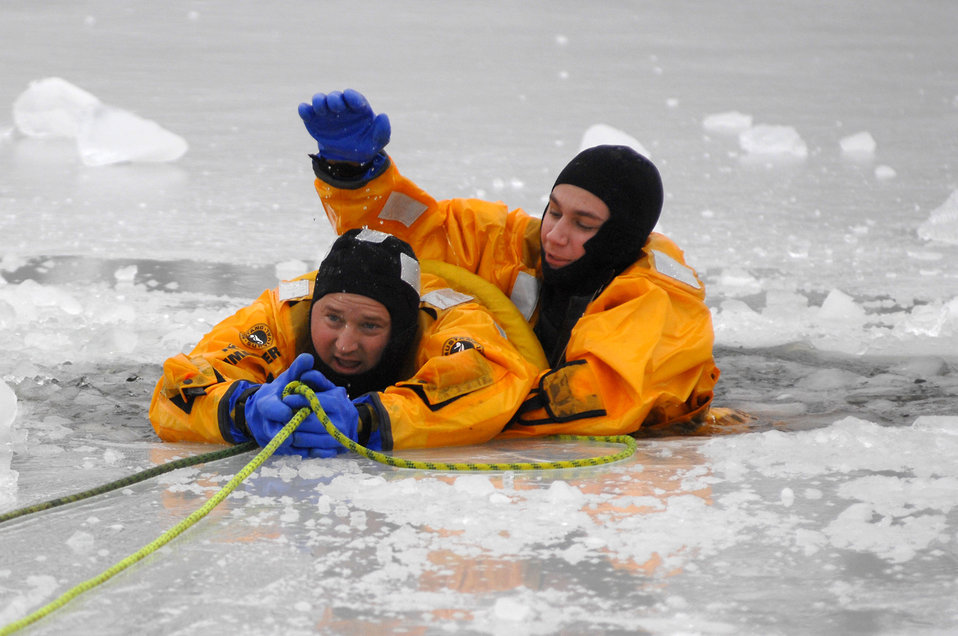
It's COLD!

Members of the 509th Civil Engineer Squadron are pulled from an icy hole during ice rescue training Jan. 31, 2011, at Whiteman Air Force Base, Mo.